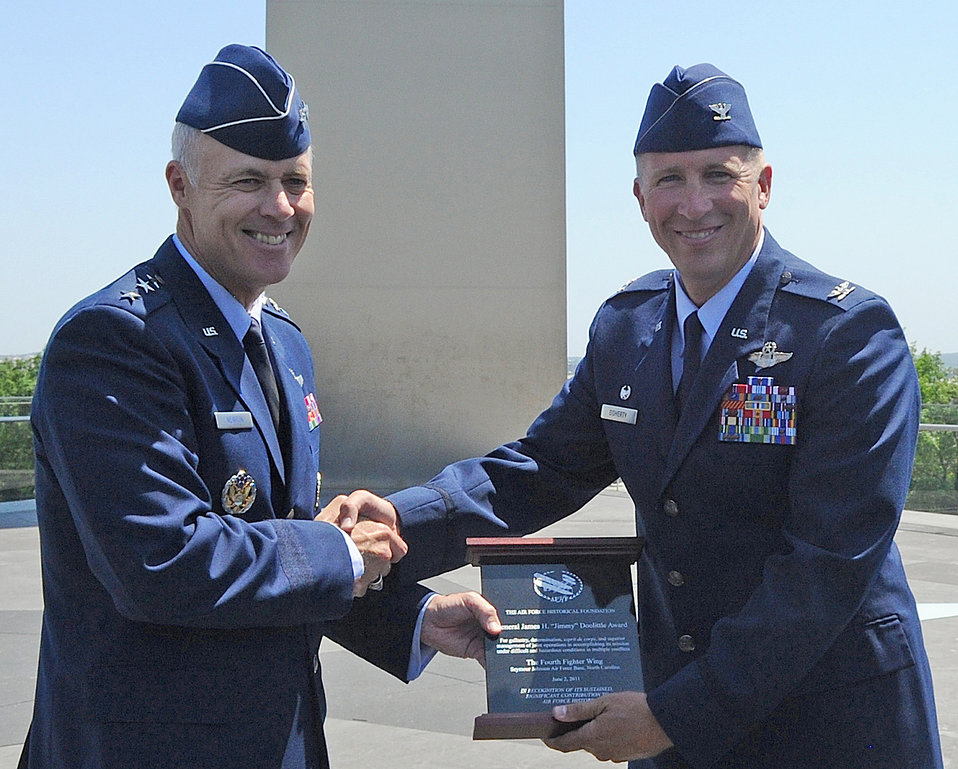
Doolittle Award

U.S. Air Force Assistant Vice Chief of Staff Lt. Gen. Richard Newton III presents Col. Patrick Doherty with the inaugural Doolittle Award June 2, 2011, at the Air Force Memorial in Arlington, Va. The Air Force Historical Foundation Doolittle Award recognizes a unit that has displayed bravery, determination, discipline, esprit de corps and superior management of joint operations while accomplishing its mission under extremely difficult and hazardous conditions in multiple conflicts, making a sustained, significant contribution to Air Force history. Colonel Doherty is the commander of the 4th Fighter Wing, and accepted the award on behalf of the wing.